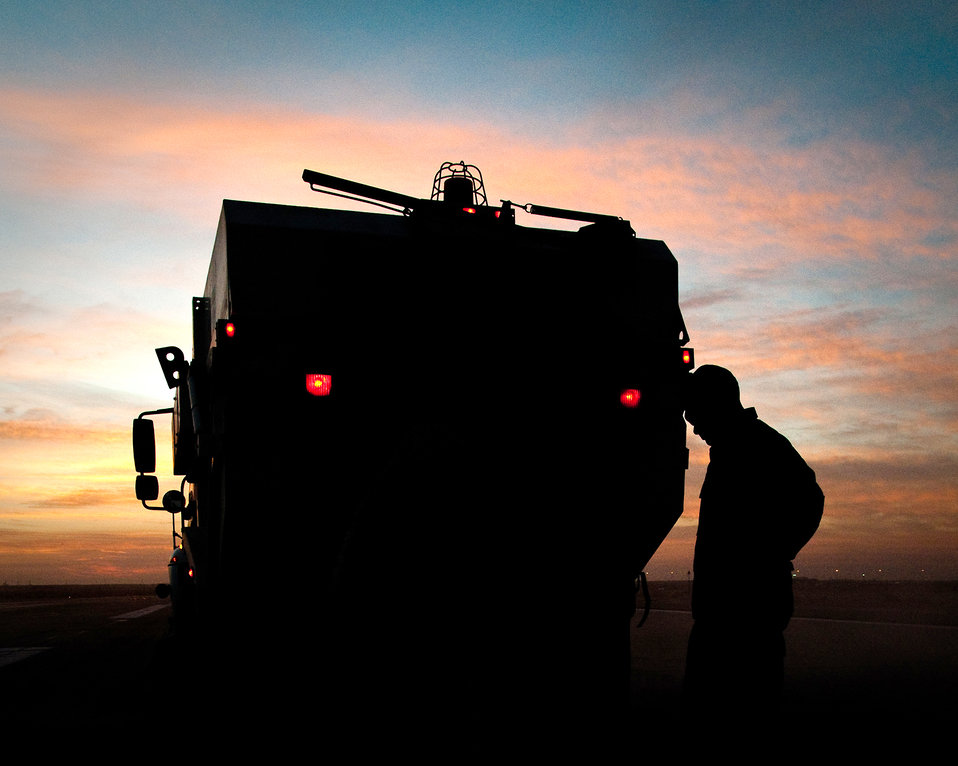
Runway repair team keeps airlift moving at 386th AEW

Senior Airman Jacob Cleer examines cracked pavement Dec. 10, 2010, on a runway at an air base in Southwest Asia. Airman Cleer is a heavy equipment operator assigned to the 386th Expeditionary Civil Engineer Squadron.